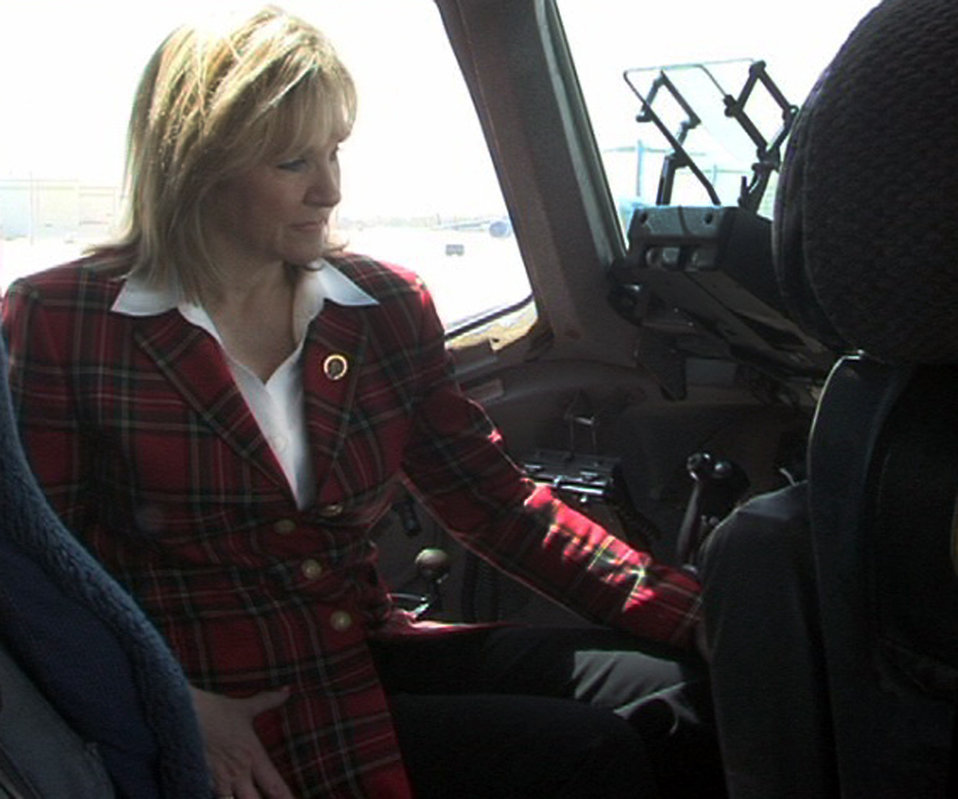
Congresswoman visits Altus

Congresswoman Mary Fallin sits in a C-17 Globemaster III cockpit during an April 9 tour of Altus Air Force Base, Okla. She visited Altus AFB as part of her assessment on the state's military readiness level.